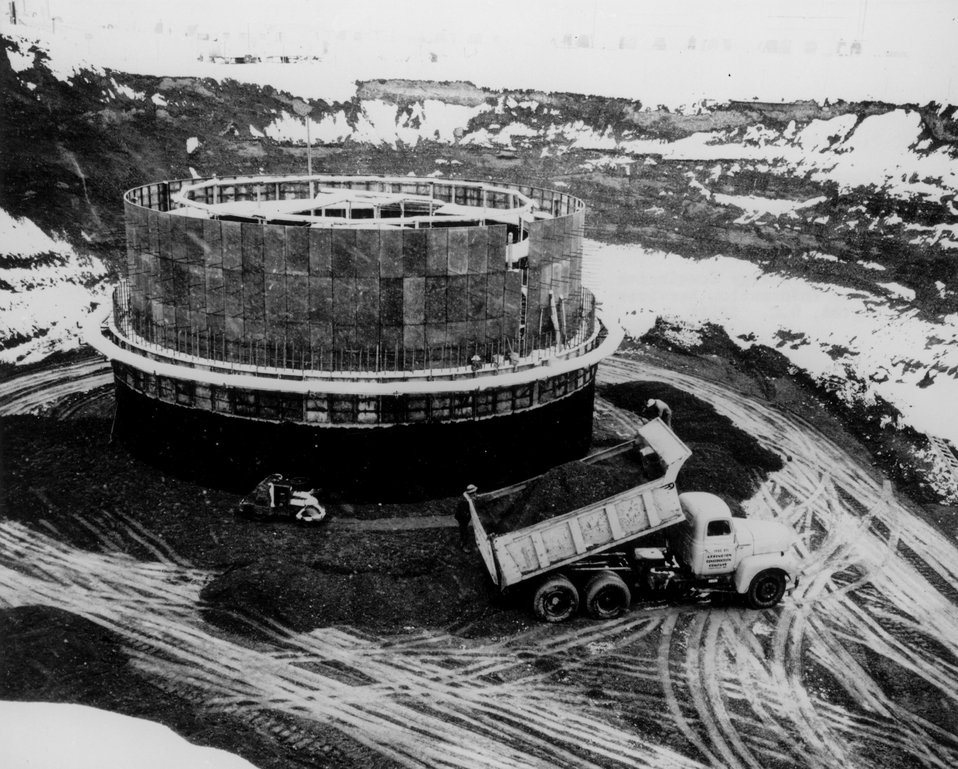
CONSTRUCTION PROGRESS: Construction Progress Concrete vault for Waste Calcining Facility storage bins. Circa 1974.